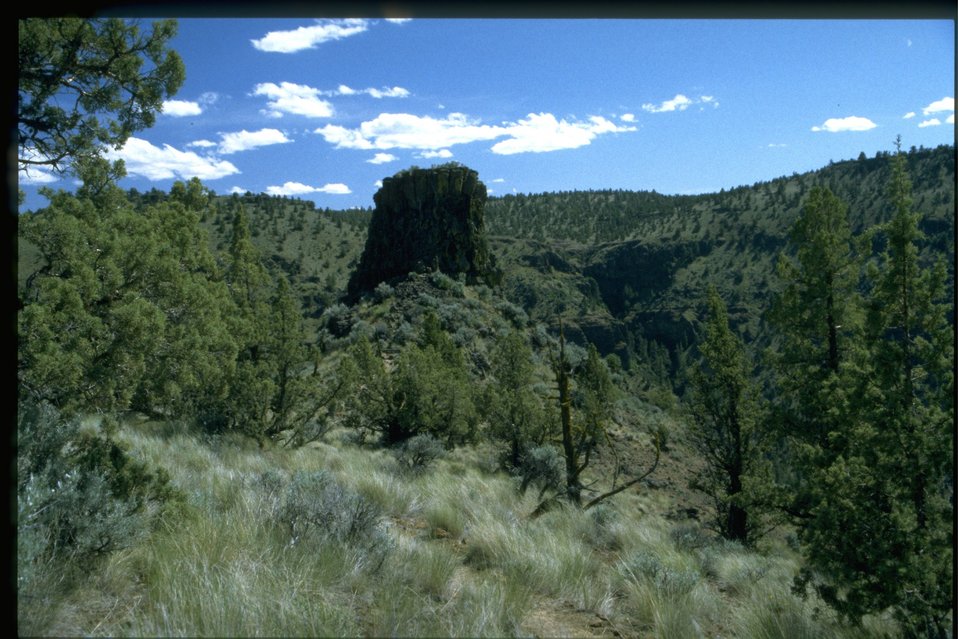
Farshot of Chimney Rock.